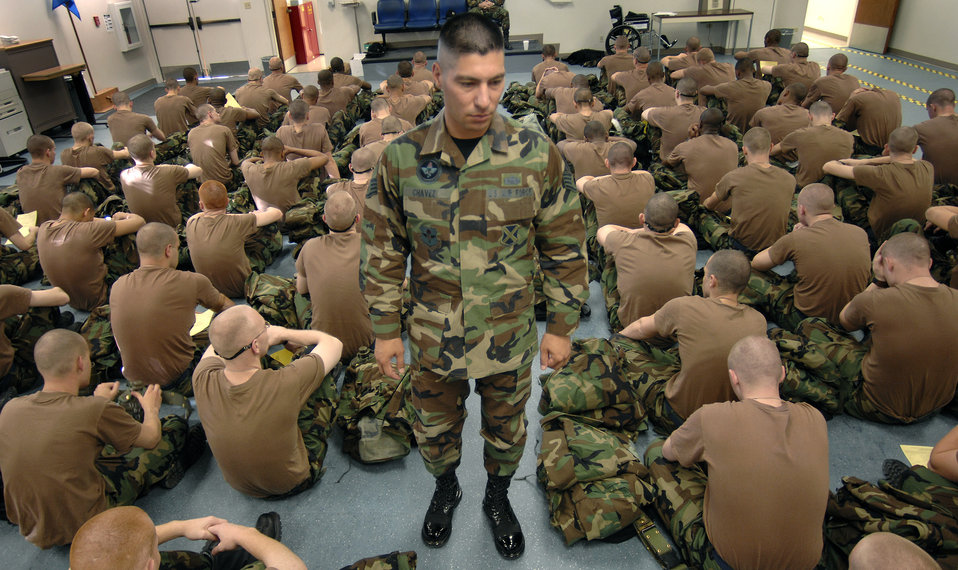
Serving through the season: Staff Sgt. Jacob Chavez

Staff Sgt. Jacob Chavez checks on Flight 149 of the 322nd Training Squadron at the immunization clinic Dec. 27. Sergeant Chavez is a military training instructor at Lackland Air Force Base, Texas, and is spending his holidays training new Airmen.